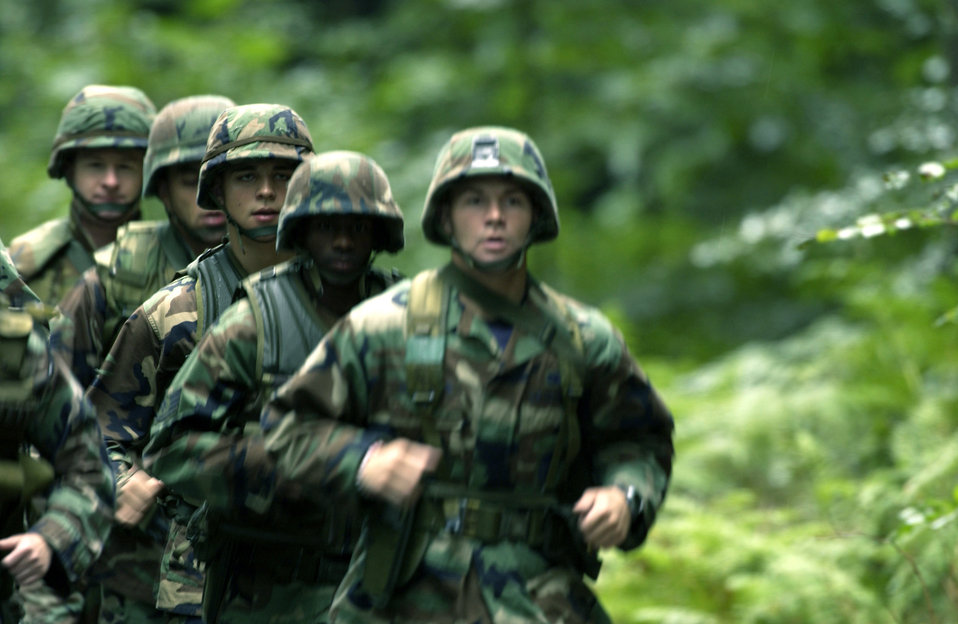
Up to the challenge

VOGELWEH AIR BASE, Germany -- Airmen run a three-mile course in full gear here recently while competing for a position on the U.S. Air Forces in Europe 2004 Defender Challenge team. The Air Force-wide competition determines the "best of the best" defenders within the security forces career field.